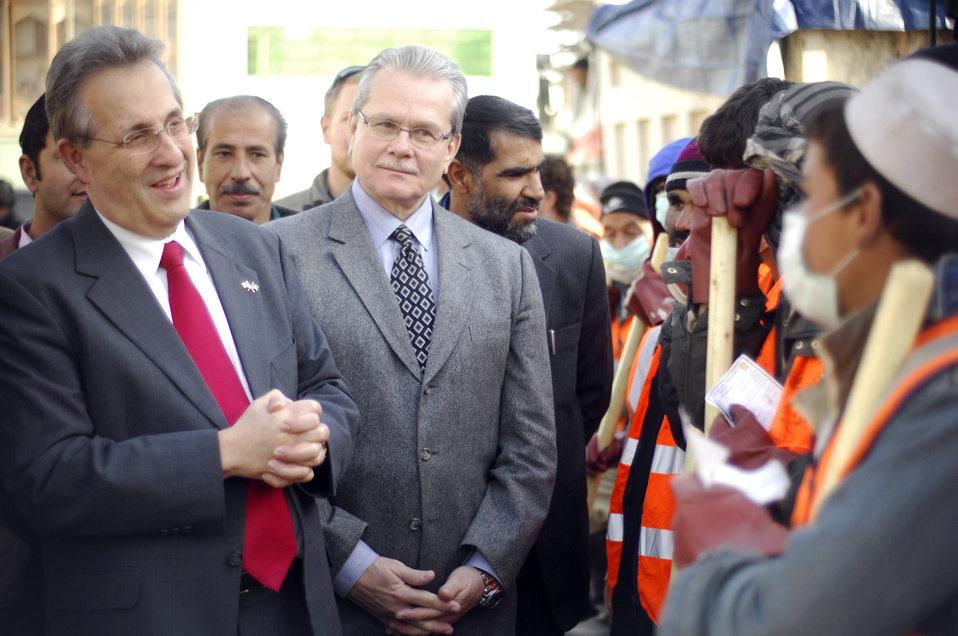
Care23